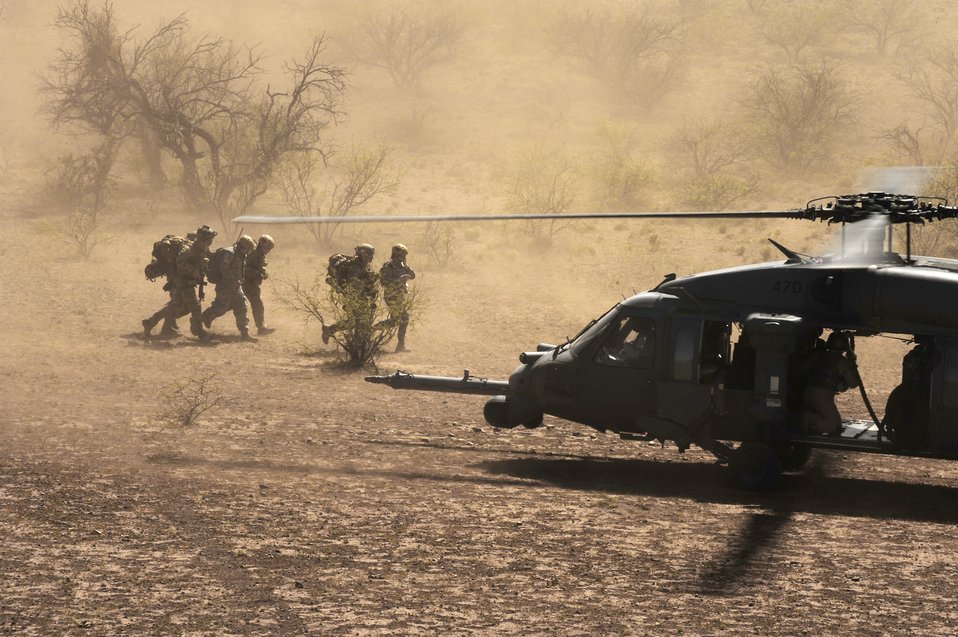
Help's here

An HH-60 Pave Hawk picks up pararescuemen and three